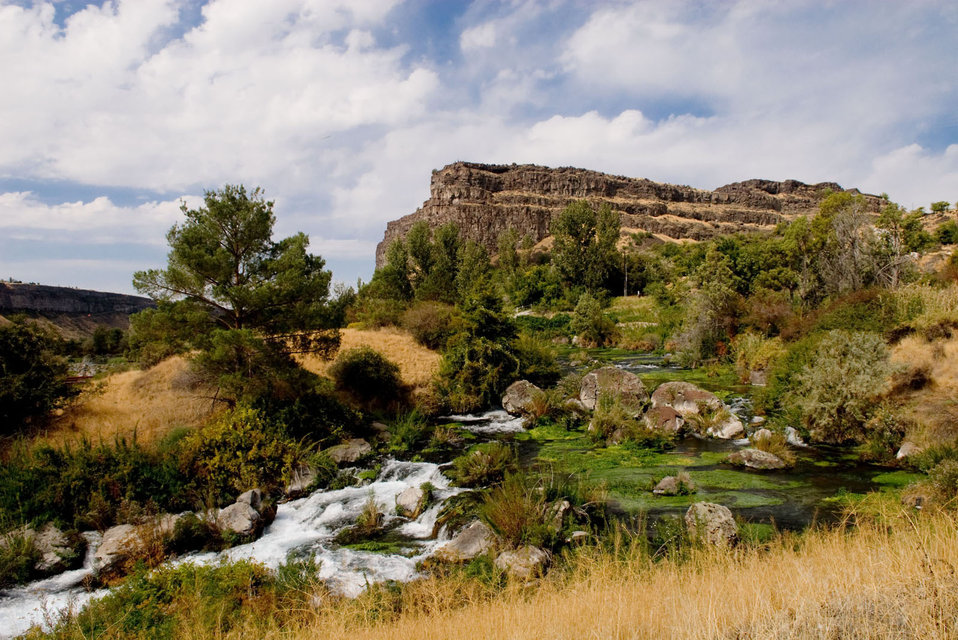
Stream Types

Year-round streams (perennial) typically have water flowing in them year-round. Most of the water comes from smaller upstream waters or groundwater, and runoff from rainfall or other precipitation is supplemental.

Seasonal streams (intermittent) flow during certain times of the year when smaller upstream waters are flowing and when groundwater provides enough water for stream flow. Runoff from precipitation supplements the flow of seasonal streams. During dry periods, seasonal streams may not have flowing surface water. Larger seasonal streams are more common in dry areas.

Rain dependent streams (ephemeral) flow only after precipitation. Runoff from rainfall is the primary source of water for these streams. Like seasonal streams, they can be found anywhere but are most prevalent in arid areas.